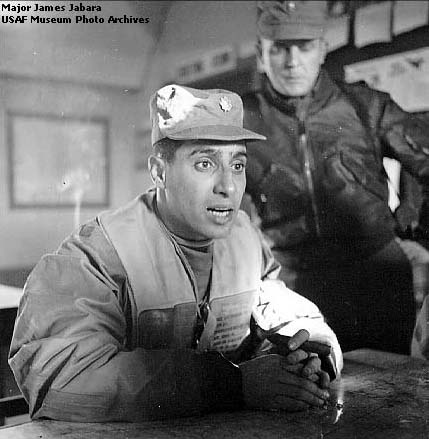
Lieutenant Colonel James Jabara

1950's -- Lieutenant Colonel James Jabara conducts a mission briefing. James Jabara, the world's first jet ace, was born in Muskogee, Okla., October 1923. Jabara was the prototypical fighter pilot, although perhaps not at first glance. Standing 5 feet 5 inches tall, Jabara was nevertheless larger than life. He was determined to enter pilot training, and he did. He was equally determined to become an ace in his F-86 Sabre, and he did.